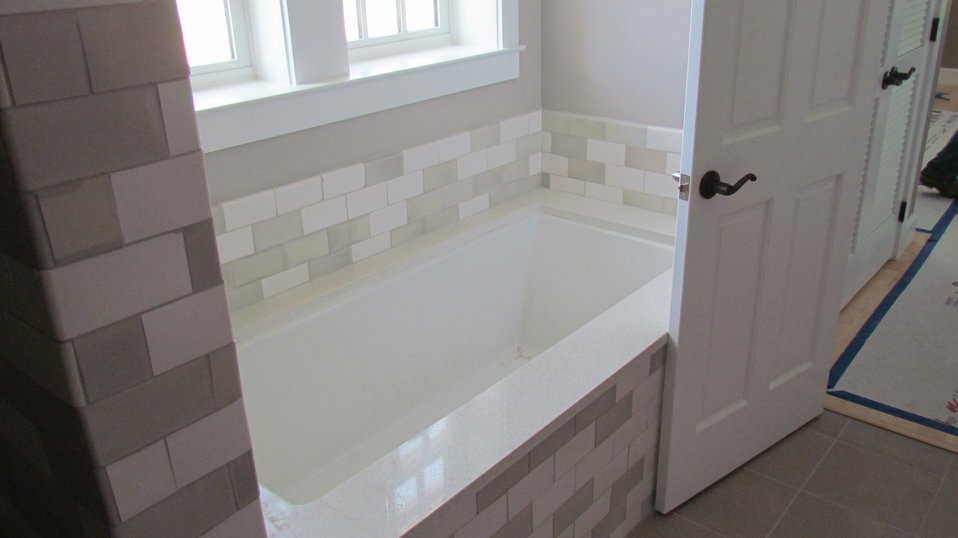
Bathtub and tile work associated with master bathroom.